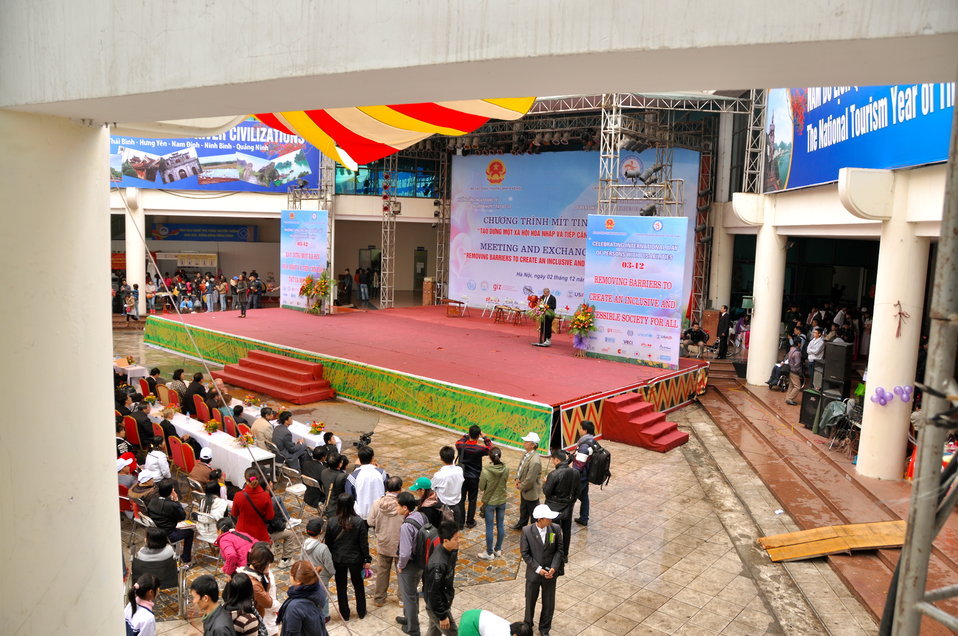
USAID joins celebration of International Day of Persons with Disabilities in Hanoi, Vietnam

December 2, 2012